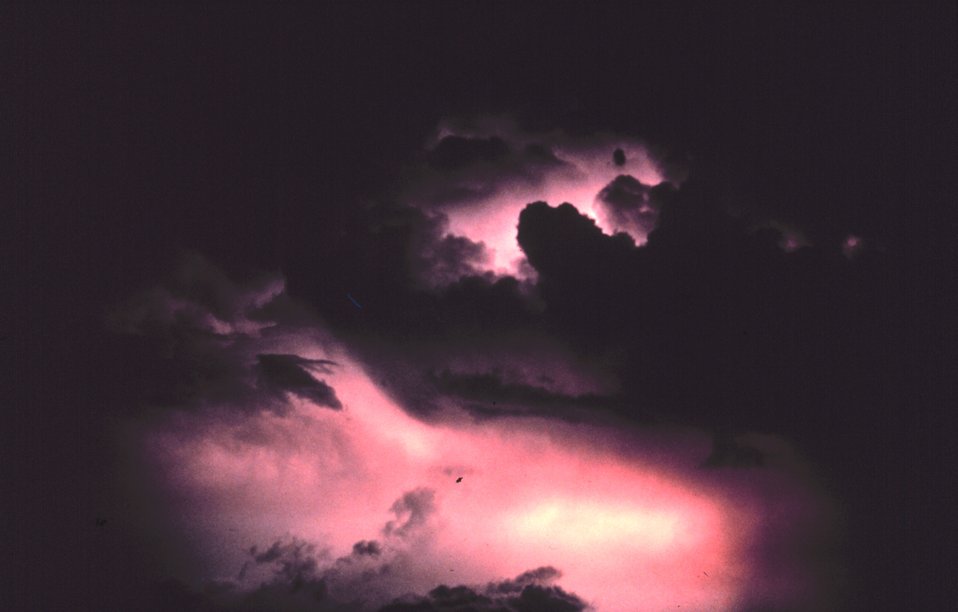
Storm clouds and bands of rain. Illuminated by lightning within a night-time thunderstorm.